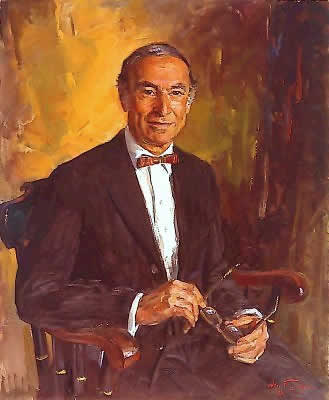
George M. White, FAIA, served as ninth Architect of the Capitol

Portrait By William Draper
Oil on canvas, 30' x 35-7/8'
1981